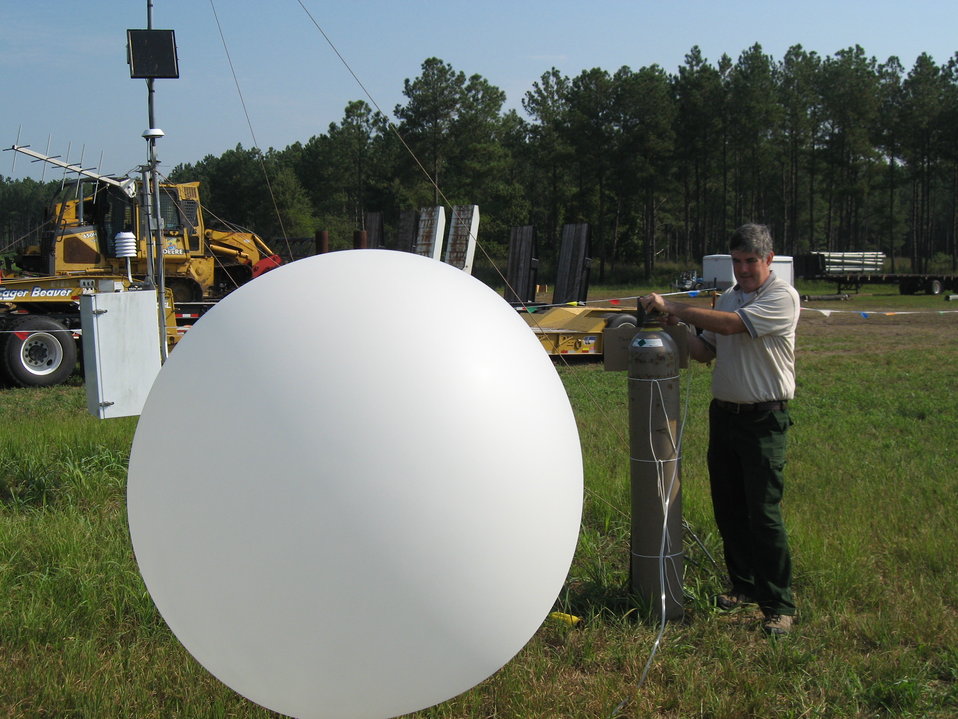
Pumping for weather

Suffolk, VA, August 2011: Accurate weather forecasts help predict fire behavior to make safe operational assignments for firefighters. Scott Kennedy, Incident meteorologist on the Lateral West Fire at Great Dismal Swamp National Wildlife Refuge, inflates a weather balloon. The refuge's remote automated weather station sits in the background. Kennedy is an employee of the National Weather Service.